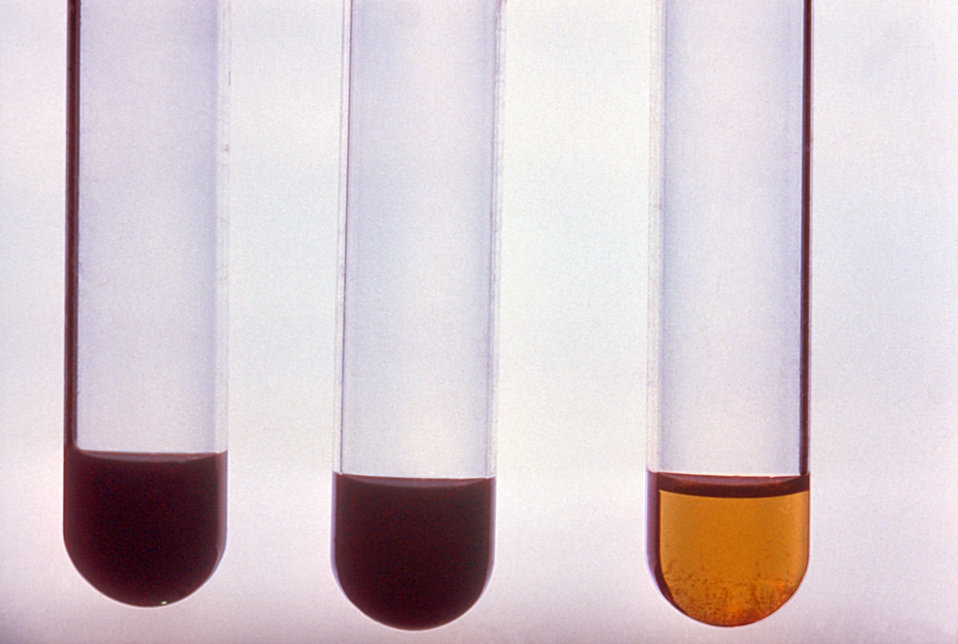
This proved to be a positive amidase test for Nocardia asteroids, one of the etiologic agents for Nocardiosis.